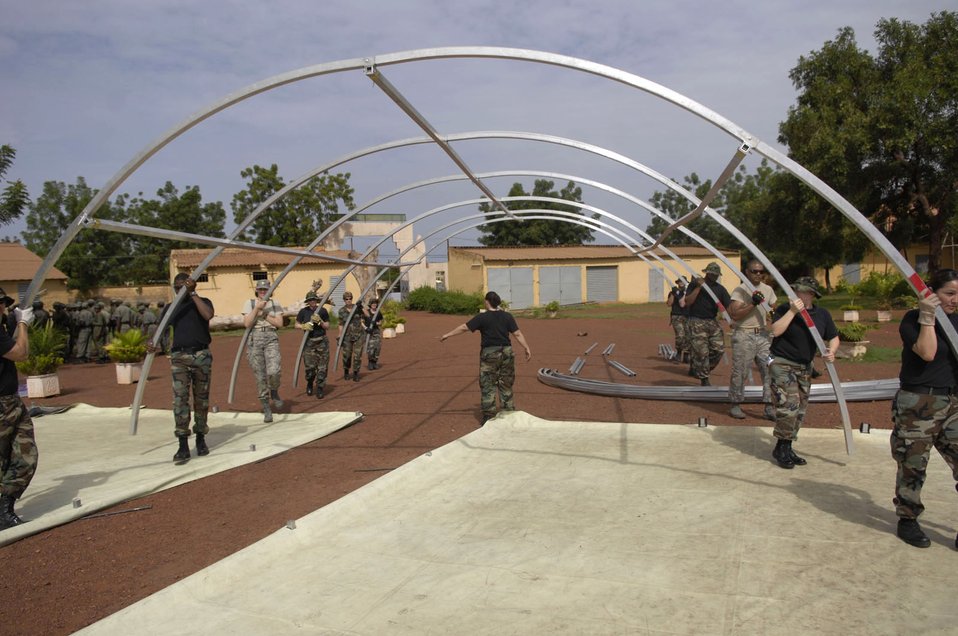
Preparing for MEDFLAG 08

Medical personnel deployed in support of MEDFLAG 08 erect the frame for a tent while setting up an expeditionary medical support unit July 13. More than 90 servicemembers deployed to Bamako, Mali, July 11 for MEDFLAG 08, a multinational medical training exercise designed to enhance medical capabilities and readiness for U.S. and African Forces.